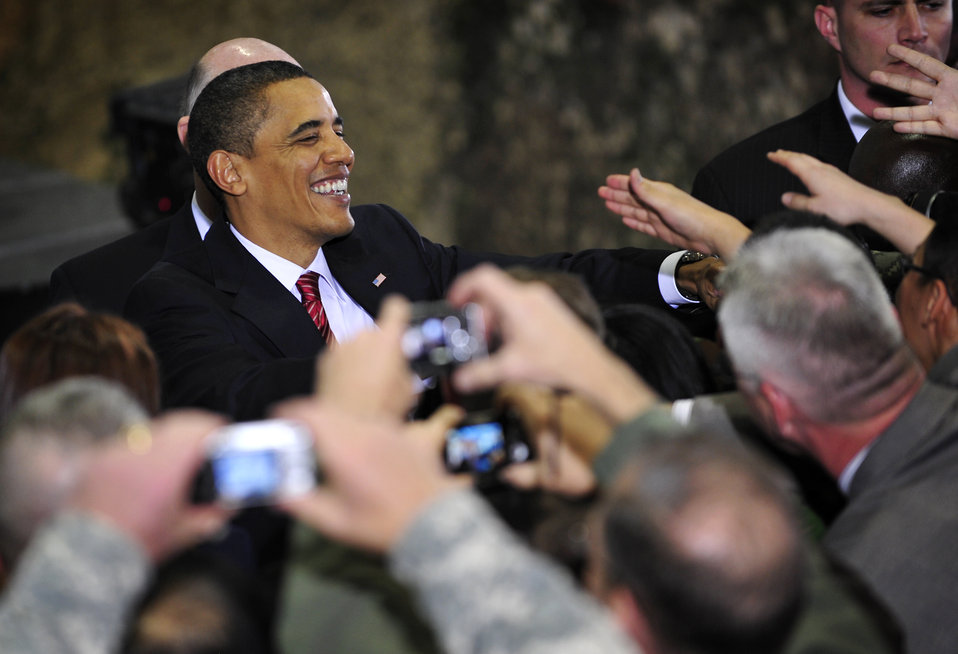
President Obama holds troop rally at Osan

President Barack Obama shakes hands with U.S. servicemembers Nov. 18, 2009, at Osan Air Base, South Korea. This is President Obama's first visit to South Korea since taking office in January.